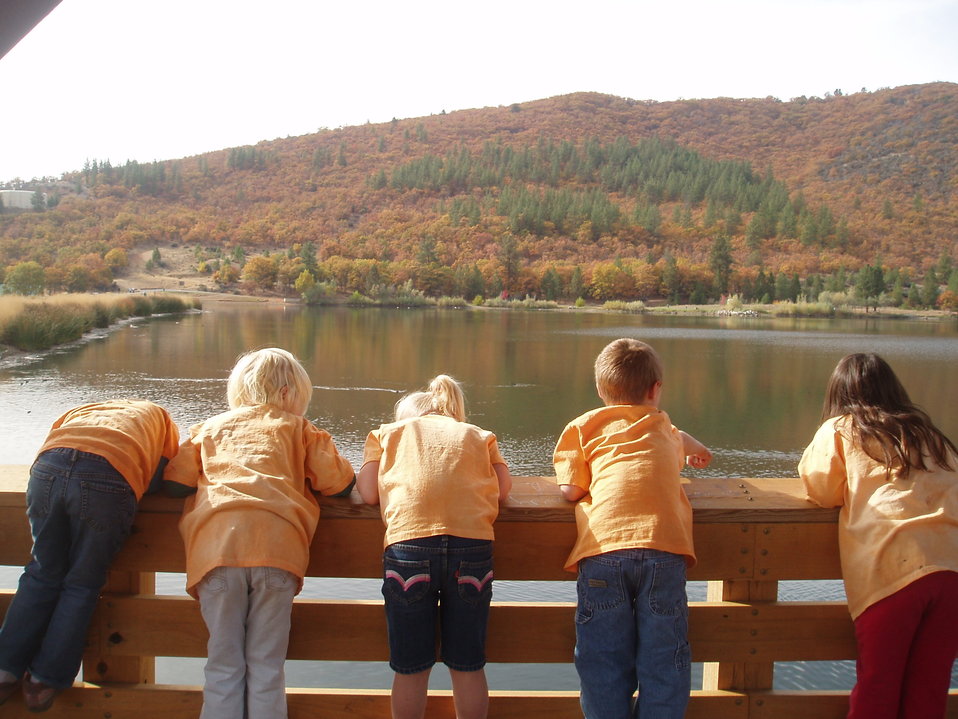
Children and Nature, Greenhorn Park, Yreka, CA

Students from Etna and Fort Jones Elementary Schools in Siskiyou County, Calif., overlook Greenhorn Reservoir during a field trip, where they learned about local wildlife and aquatic habitats.